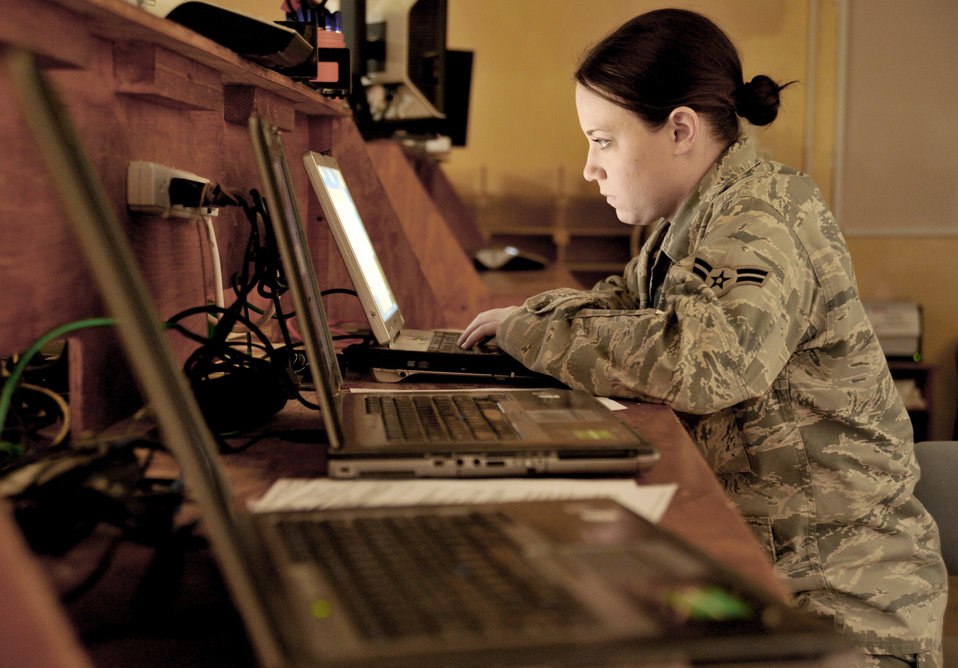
COB Speicher

Airman 1st Class Sarah Taylor puts a customer's laptop on the domain Jan. 20, 2011, on COB Speicher, Iraq. Airman Taylor is an automated-data-processing and equipment technician for COB Speicher's direct-support-signal team.